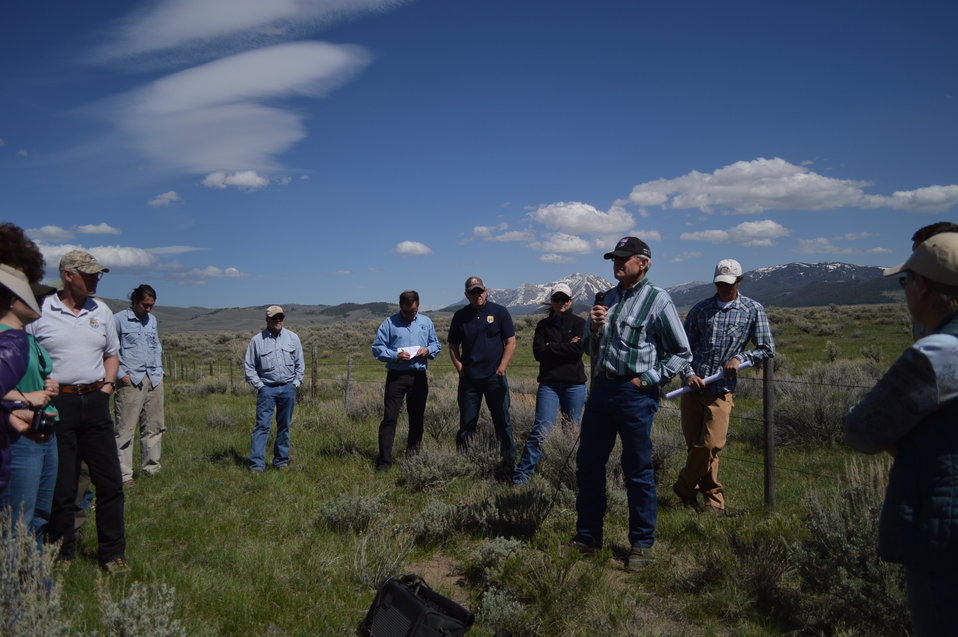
Regional Leadership Visit to Montana 2014